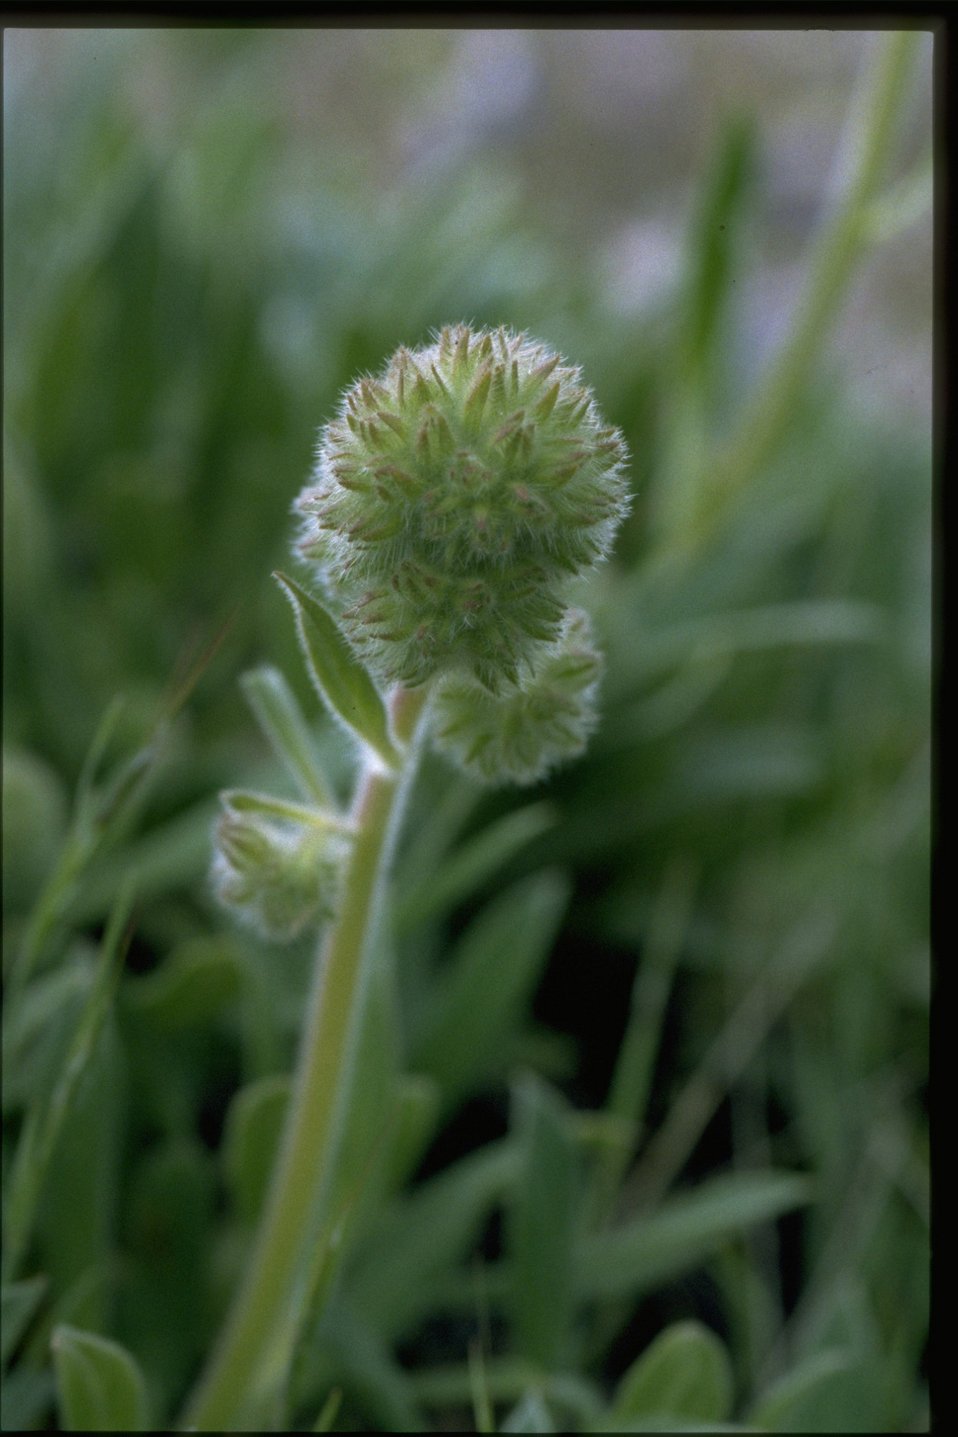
Closeup shot of Phacelia corymbosa.